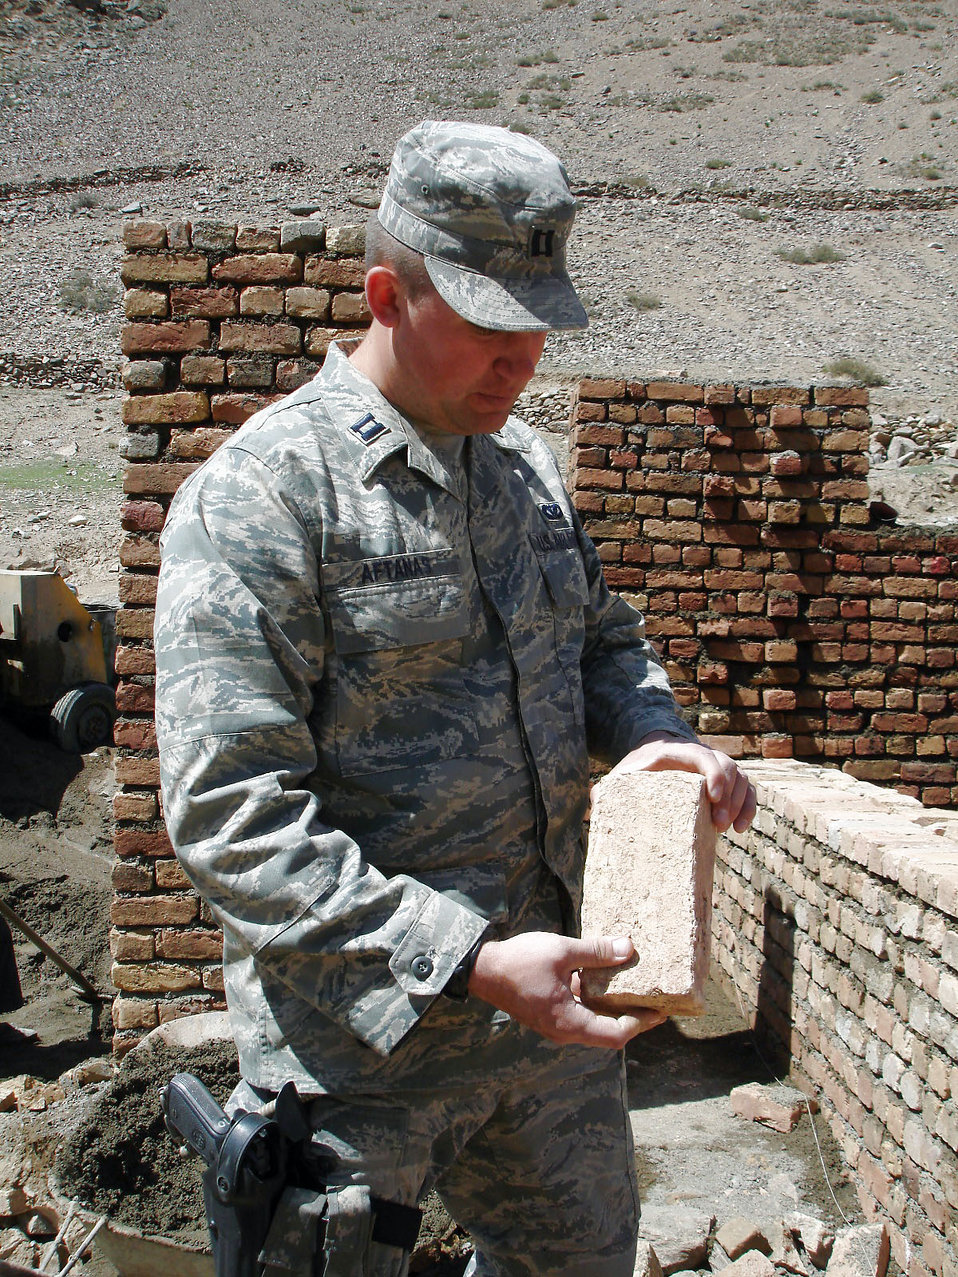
Air Force engineers work outside the wire every day

Capt. Jason Aftanas inspects a brick for the wall of a tashnab (bathroom) at the Pukh High School construction site April 1 in Panjshir, Afghanistan. The school will be a two-story, 16-room reinforced concrete structure that will accommodate up to 3,000 students. Captain Aftanas is a Panjshir Provincial Reconstruction Team engineer. Air Force engineers are outside the wire every day conducting site assessments, quality control missions and preparing the province to respond to natural disasters.